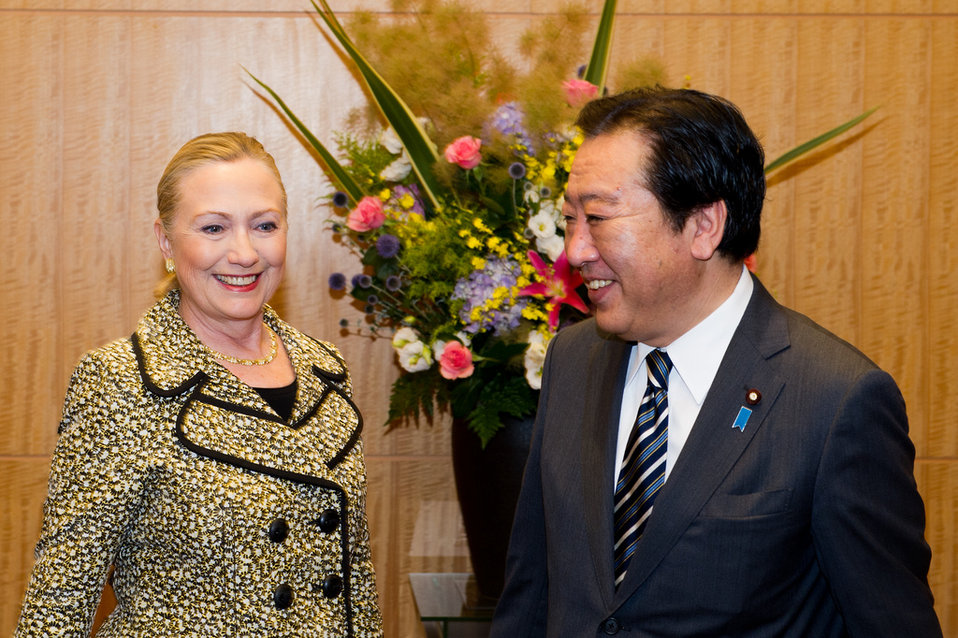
Secretary Clinton With Japanese Prime Minister Noda

U.S. Secretary of State Hillary Clinton is greeted by Japanese Prime Minister Yoshihiko Noda on the sidelines of the Tokyo Conference on Afghanistan in Tokyo, Japan, on July 8, 2012.